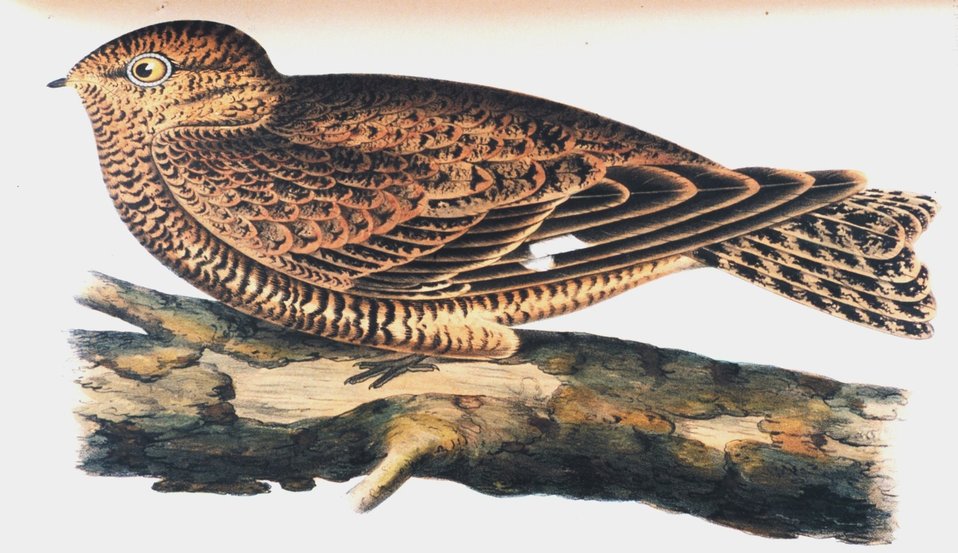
Chordeiles henryi, Cassin. This image was included in: Reports of Explorations and Surveys .... Volume X. 1859. Plate XVII. P. 16 of U. S. Pacific Railroad Explorations and Surveys 38th,39th, 41st Parallels. Call Number F593 .U58 1855 .